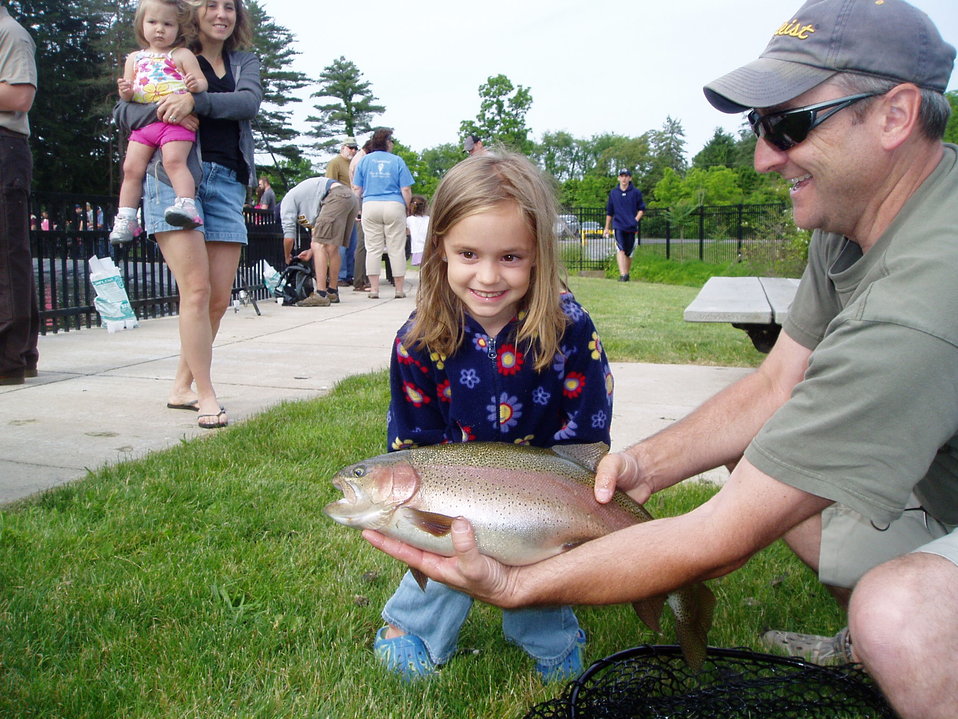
Northeast Fishery Center's Annual Fishing Event

Girl with fish at the Northeast Fishery Center's annual fishing event in Lamar, PA.